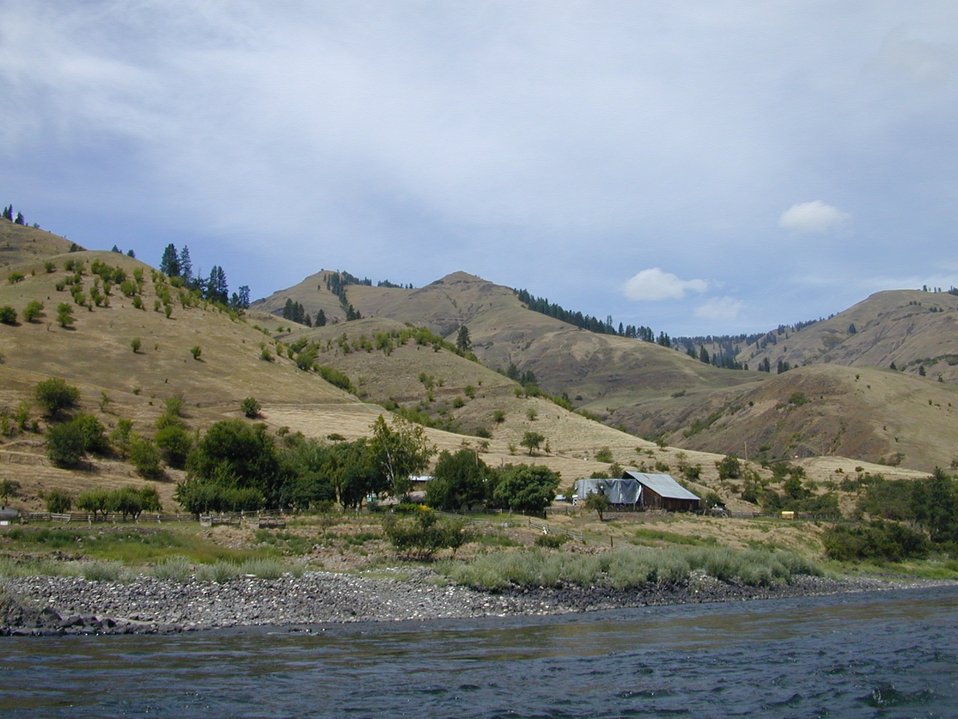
Scenic shot of Lower Salmon River Cottonwood Field Office UCSC Upper Columbia Salmon Clearwater District